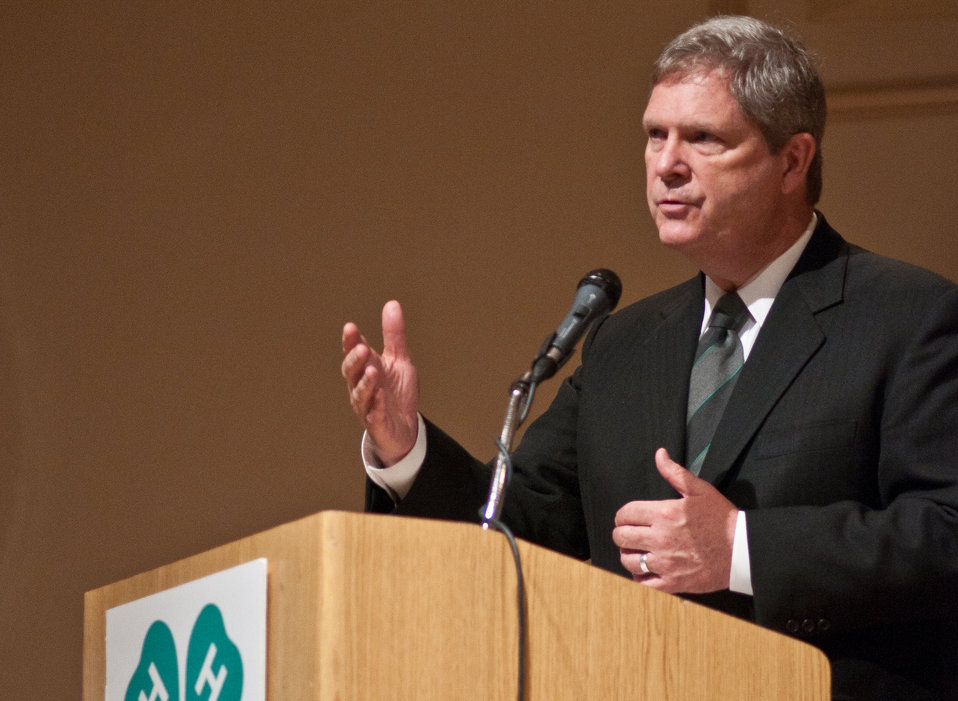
U.S. Department of Agriculture (USDA) Secretary Tom Vilsack responded to a question from Jessica Mullin, who asked a question regarding how America will meet future food demands. Part of his reply mentioned the development goal of 1,000 new farmers. The conference is the premier youth development opportunity of the USDA, held in Washington, DC, on Tuesday, April 5, 2011. Aged between 15-19 years old the attendees were selected by various means by their states to be delegates to the conference. USDA photo illustration by Lance Cheung.